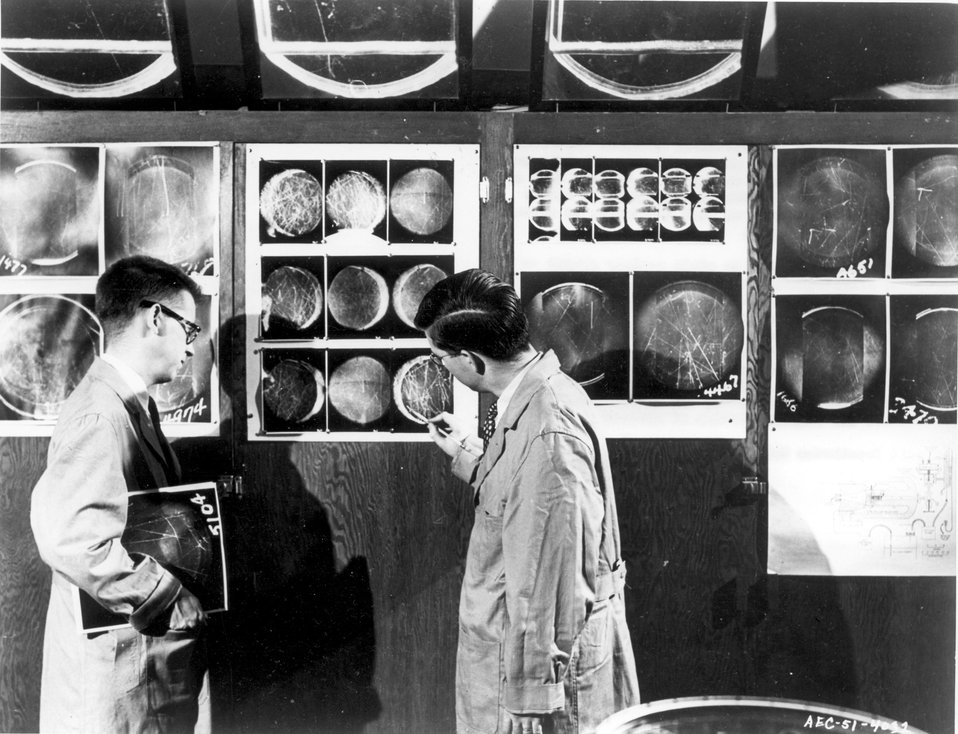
CLOUD CHAMBER PHOTOS...Dr. Earle C. Fowler, left, and his brother, William B. Fowler of the Physics Department at Brookhaven National Laboratory. c. 1951